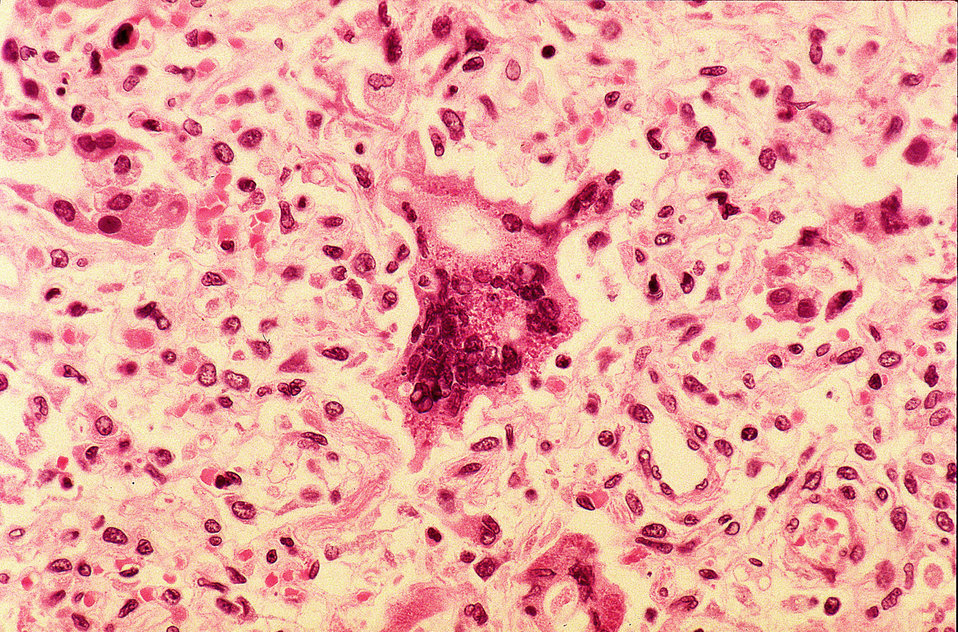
Histopathology of measles pneumonia.